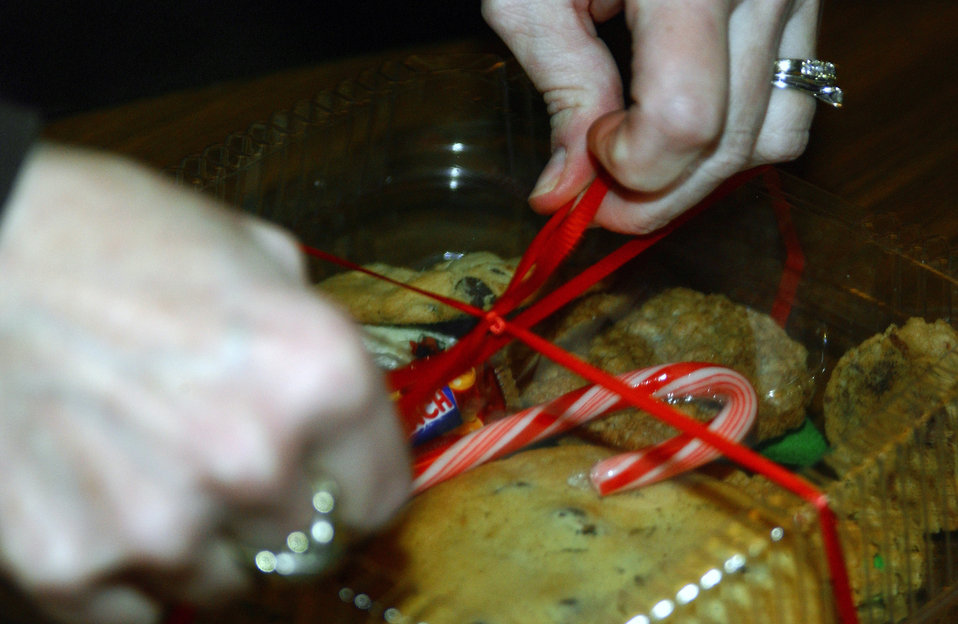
Cookie drive delivers holiday warmth during Alaskan winter

A box of homemade cookies gets the finishing touches put on it before being picked up for delivery during Operation Cookie Crunch Dec. 14 at Eielson Air Force Base, Alaska. The Eielson Officer's Spouses Club sponsors and organizes the yearly event. More than 550 homemade cookies are dropped off and packaged by volunteers and then delivered by squadron first sergeants to single Airmen living in the dormitories as a holiday gesture.